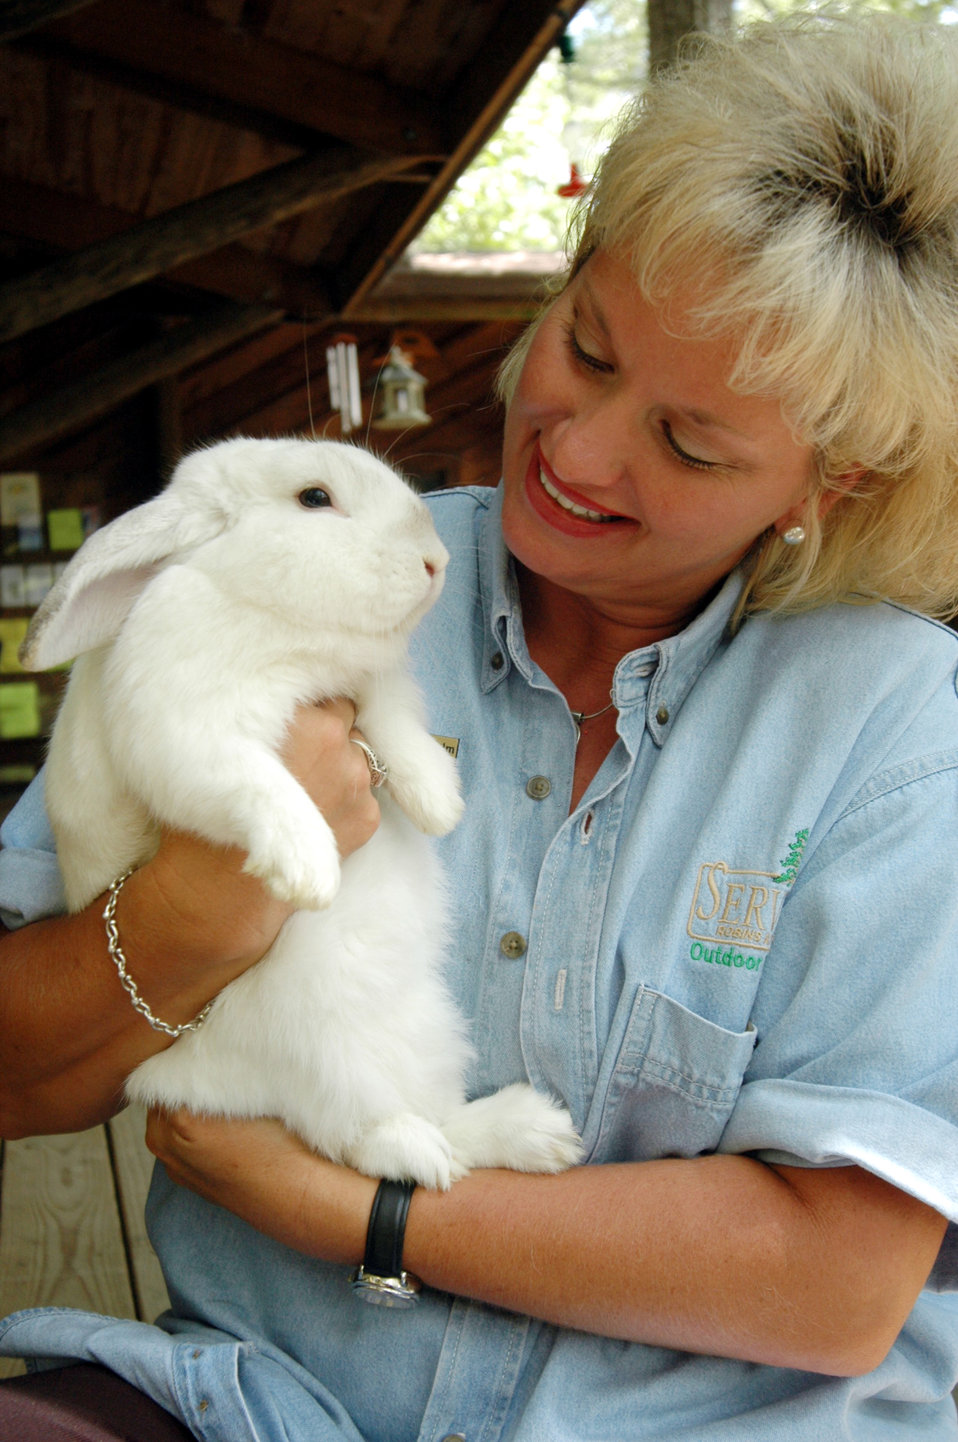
Fuzzy wuzzy bunny

ROBINS AIR FORCE BASE, Ga. -- Sharron Wilhelm gives Lucky, a lop-eared rabbit, some tender-loving care. Ms. Wilhelm is the supervisor for the Spalding Nature Center here. Besides rabbits, some of the center's animals include snakes, turtles and a variety of birds.